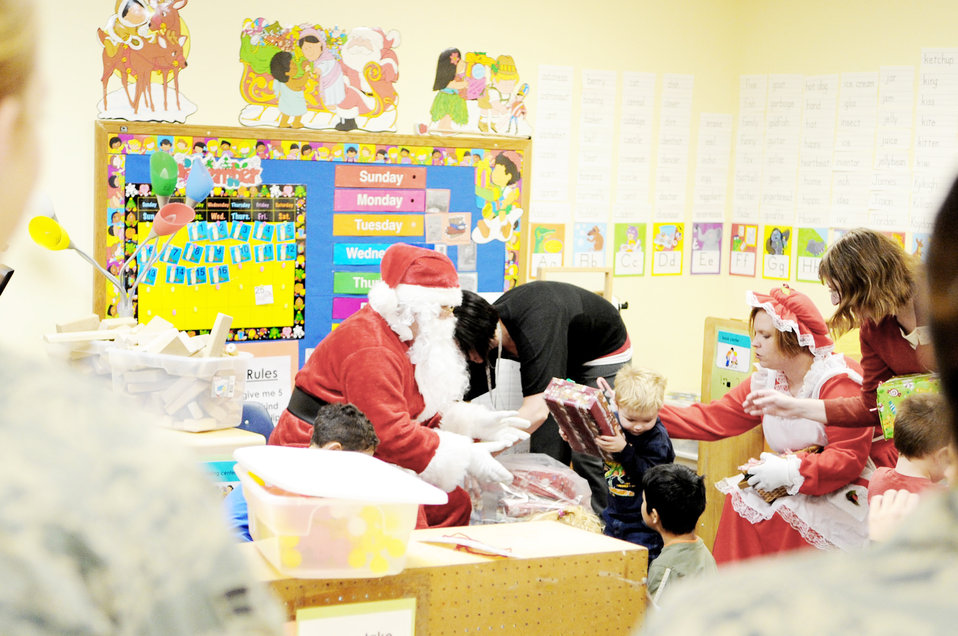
Ellsworth members support Angel Tree program

Children receive presents at the Youth and Family Services child care center Dec. 17, 2009, in Rapid City, S.D. The child care staff provided the names and ages of infants, toddlers and preschool-aged children in their program to 28th Operations Group members from Ellsworth Air Force Base, S.D., who then purchased and wrapped gifts for every child.